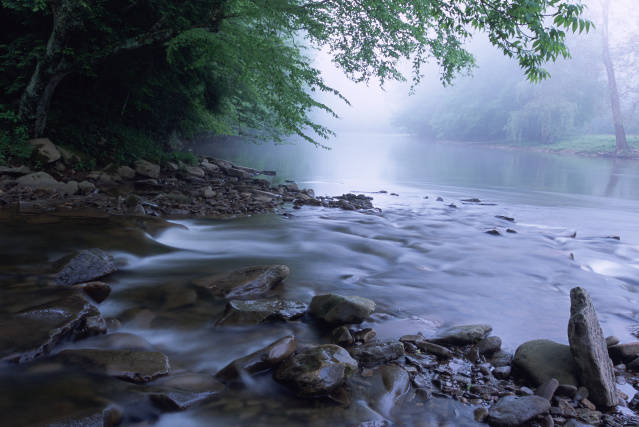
River habitat

Photo credit: USFWS/Ryan Hagarty

The services associated with healthy ecosystems, including clean water, healthy habitats, and desirable living and recreational environments are invaluable.